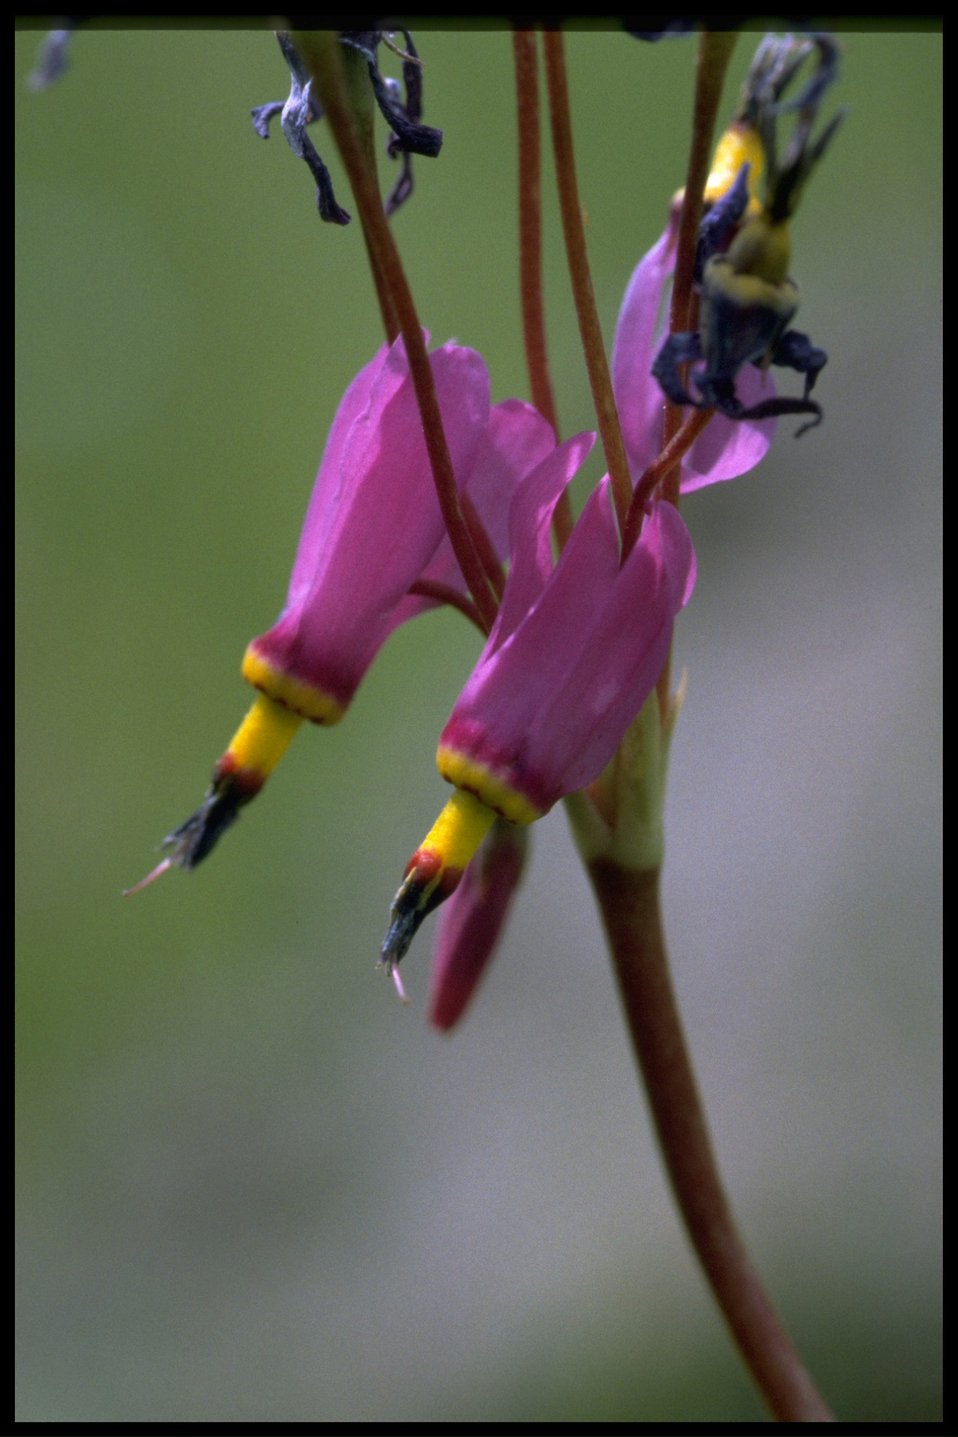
Closeup of Shooting Star flower.